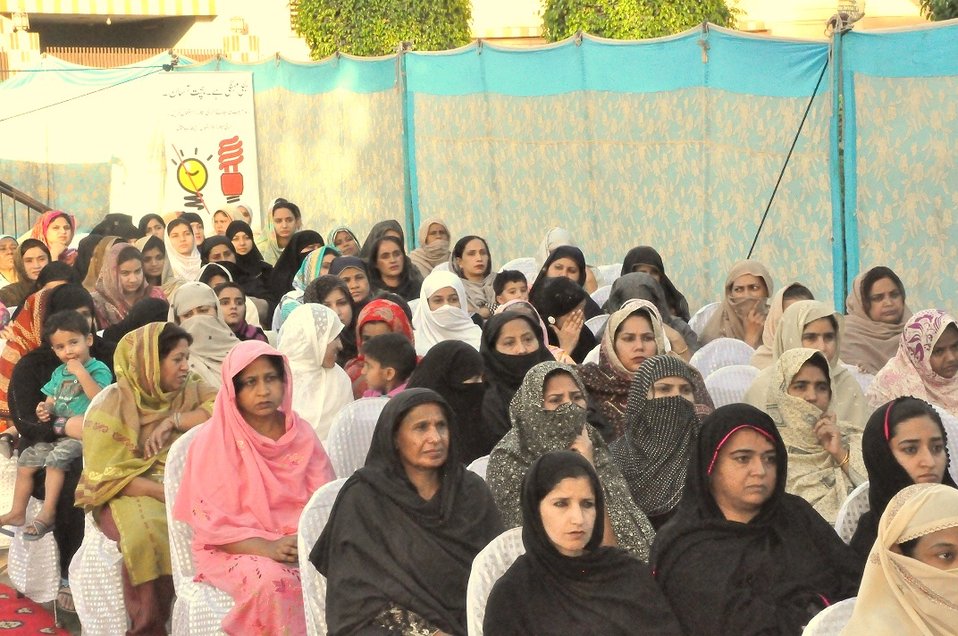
USAID brings theft awareness to MEPCO’s farming community

“These sessions help in bringing the importance of a citizen’s role in conserving power especially in the attempt to reduce theft in the region – many people do not know the role theft plays in the current shortfall, and these [sessions] help to elucidate that.”
MEPCO Additional Deputy Manager Commercial
Irum Saba

The Power Distribution Program, in collaboration with MEPCO, organized a community gathering of women in MEPCO’s Wallayatabad subdivision. This activity sensitizes housewives about the prevailing practice of power theft; female MEPCO employees spoke about MEPCO’s role, the reasons behind the shortfall and the role that theft plays in it, and provided energy conservation tips for homes.